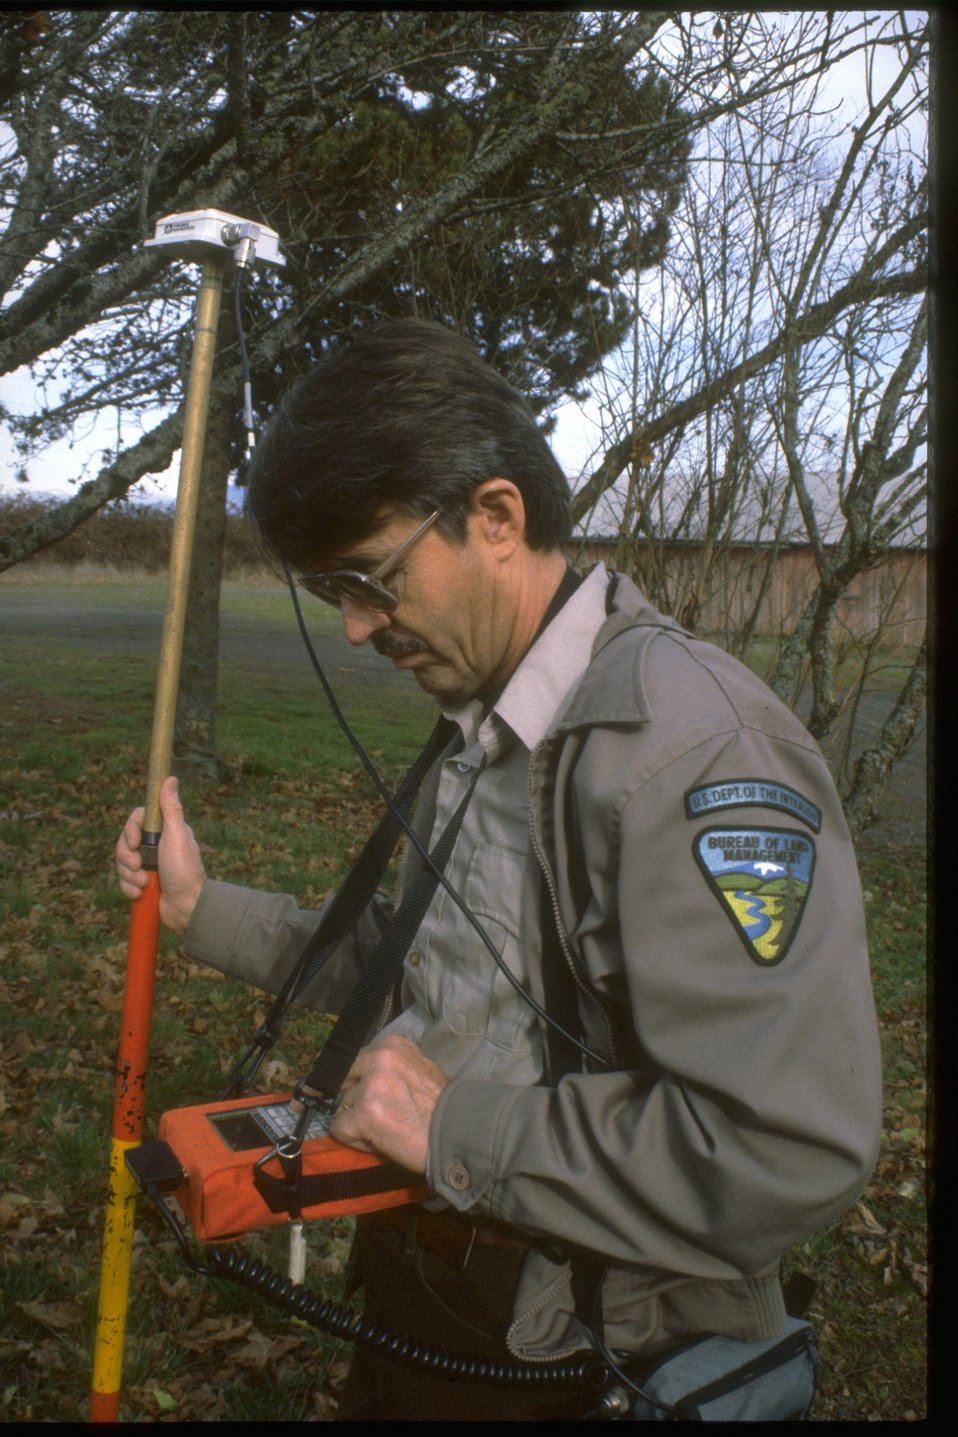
Engineer uses Global Positioning System unit.